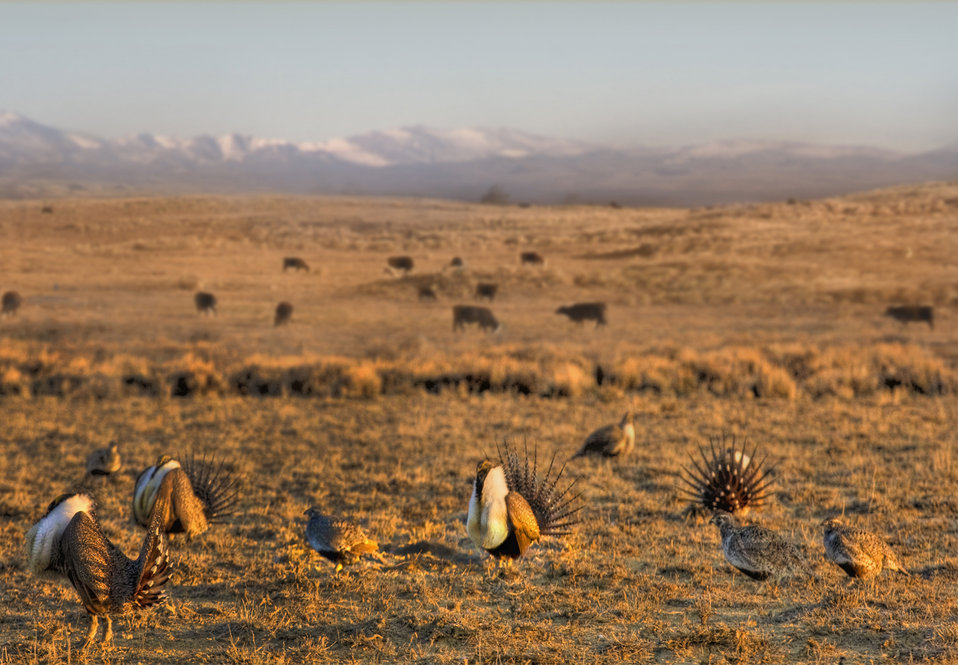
Species4

The greater sage grouse thrives in the sagebrush landscape of the West.